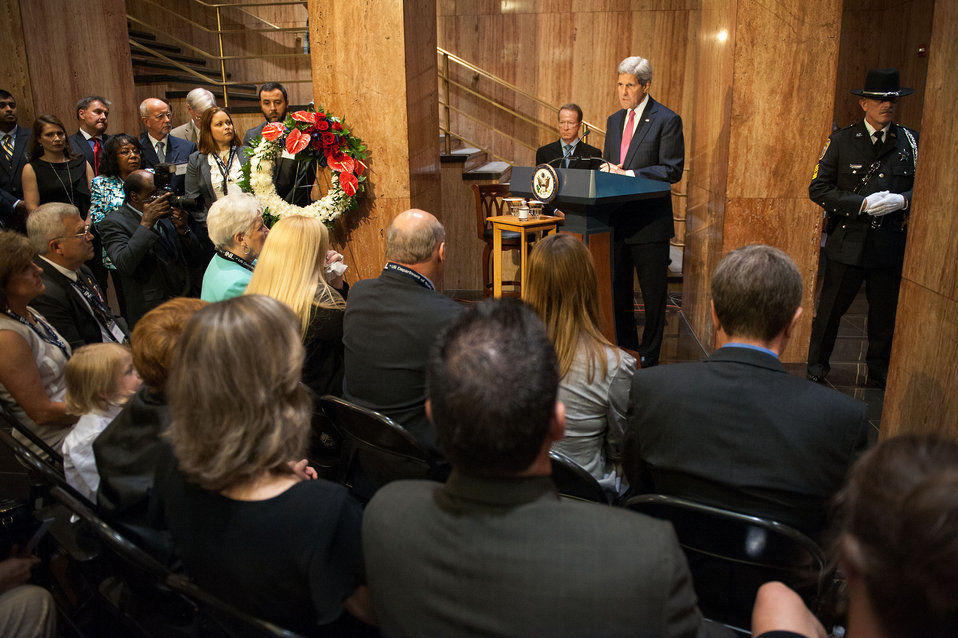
Secretary Kerry Delivers Remarks at the Dedication of the Bureau of International Narcotics and Law Enforcement Affairs Memorial Wall Ceremony

U.S. Secretary of State John Kerry delivers remarks at the dedication of the Bureau of International Narcotics and Law Enforcement Affairs memorial wall ceremony at the U.S. Department of State in Washington, D.C., on June 12, 2014. The memorial honors personnel who have died while participating in overseas criminal justice and counternarcotics assistance programs on behalf of the United States.